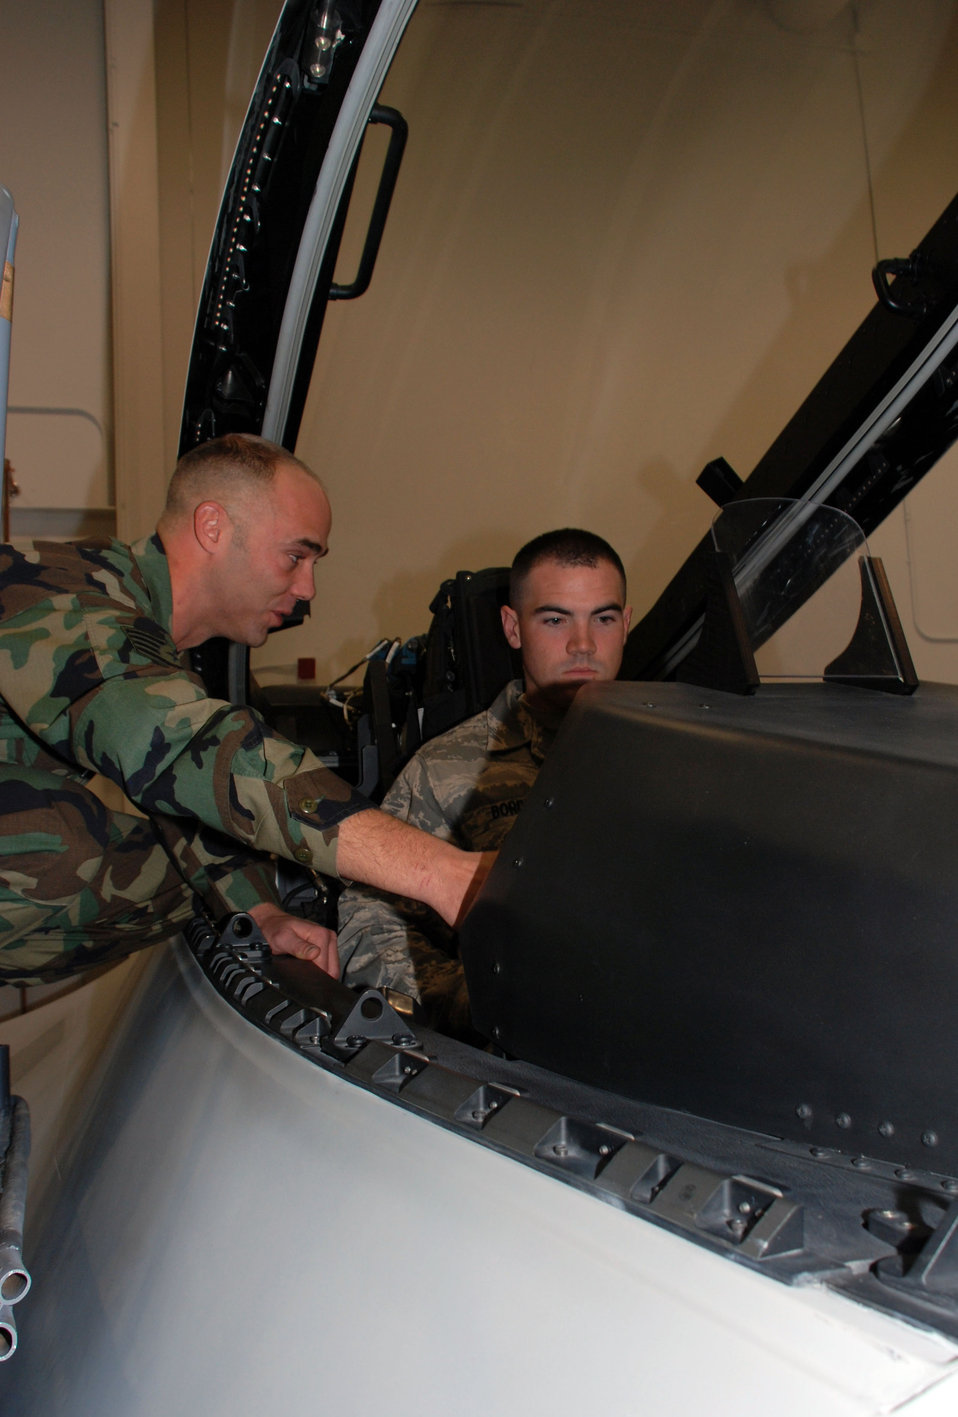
F-22 Raptor crew chiefs begin training

Staff Sgt. Chris Dippold shows Airman 1st Class Michael Borden the inside of a Raptor cockpit trainer Jan. 29 at Sheppard Air Force Base, Texas. Airman Borden is one of the first Airmen to attend the F-22 Raptor Crew Chief training course in the new Raptor Maintenace Training Facility. Sergeant Dippold is a course instructor with the 362nd Training Squadron.